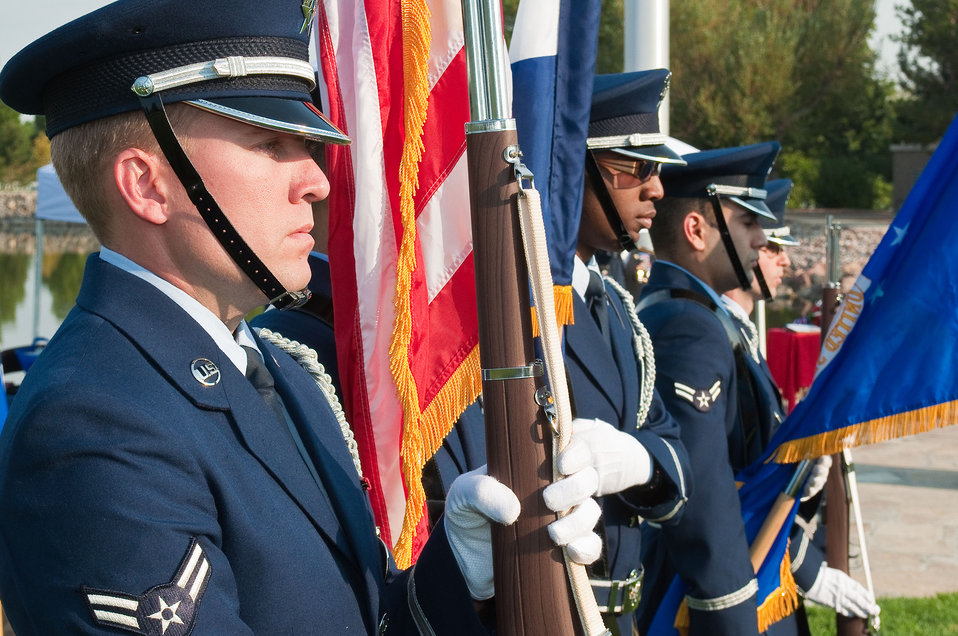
POW awarded after 32 years

The 460th Space Wing Color Guard posts the colors for the ceremony to present the Prisoner of War Medal to retired Master Sgt. James O’Neal Hughes at Fort Logan National Cemetery, Denver, Colo., Aug. 22, 2012. On Nov. 4, 1979, then-Staff Sgt. Hughes was taken hostage along with 65 other Americans at the U.S. Embassy in Tehran, Iran, by a group of Iranian students.